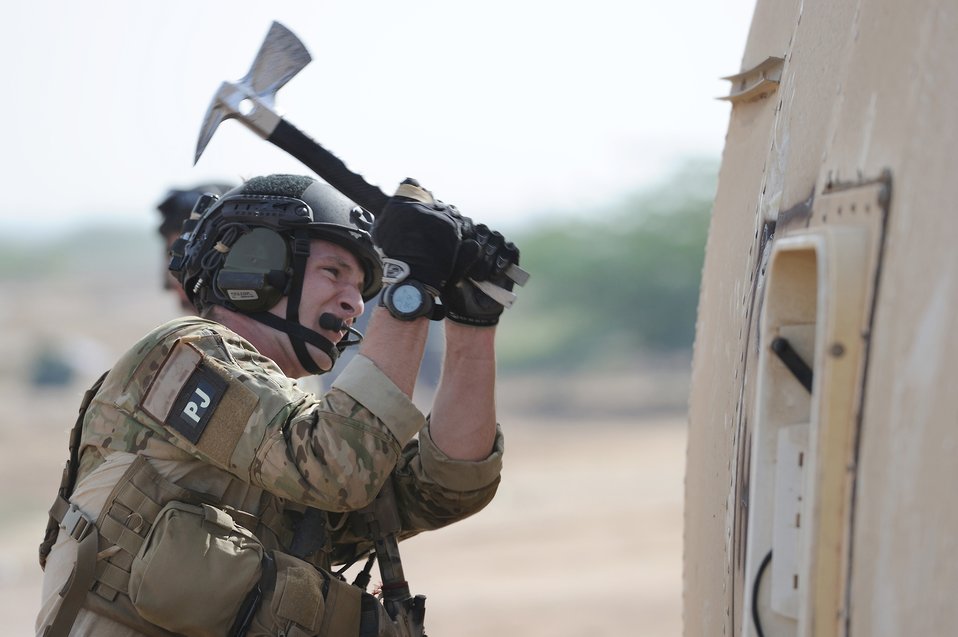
Airmen participate in African rescue exercise

At a combat search and rescue extraction exercise, a pararescueman cuts his way into the